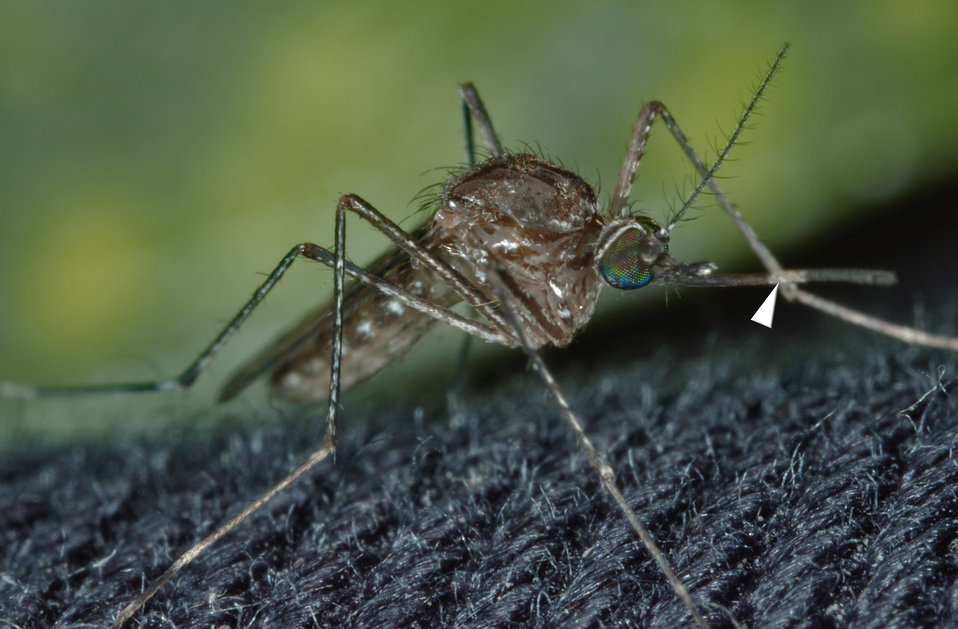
This 2005 photograph shows a close-up view of a Culex Tarsalis mosquito resting on a piece of fabric. Note the light-colored band wrapped around its dark-scaled proboscis (arrowhead), and though not noticeably apparent, if you look closely, the multiple similarly light-colored bands wrapped around its distal appendages, i.e., the tibia and femur, characteristics that identify this as a C. tarsalis.